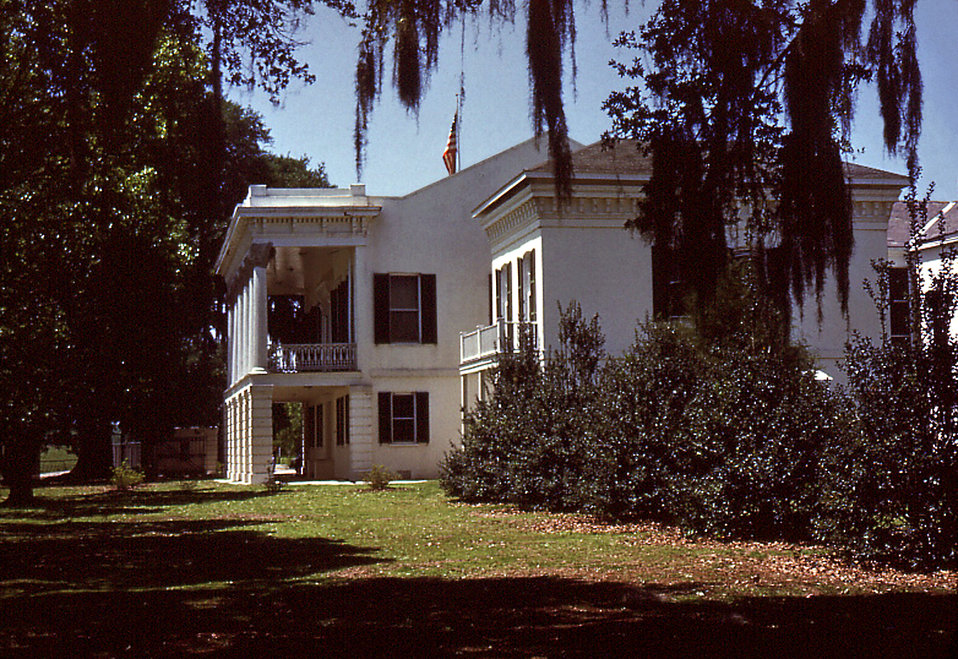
Depicted in this historic image was a Carville, Louisiana Leprosarium building in which was housed a number of first floor administration offices, and visitors' quarters used to house visiting hospital officials only. As a self-contained facility, the leprosarium offered visiting officials temporary housing with all necessary amenities in order to make their stay as pleasant as possible.